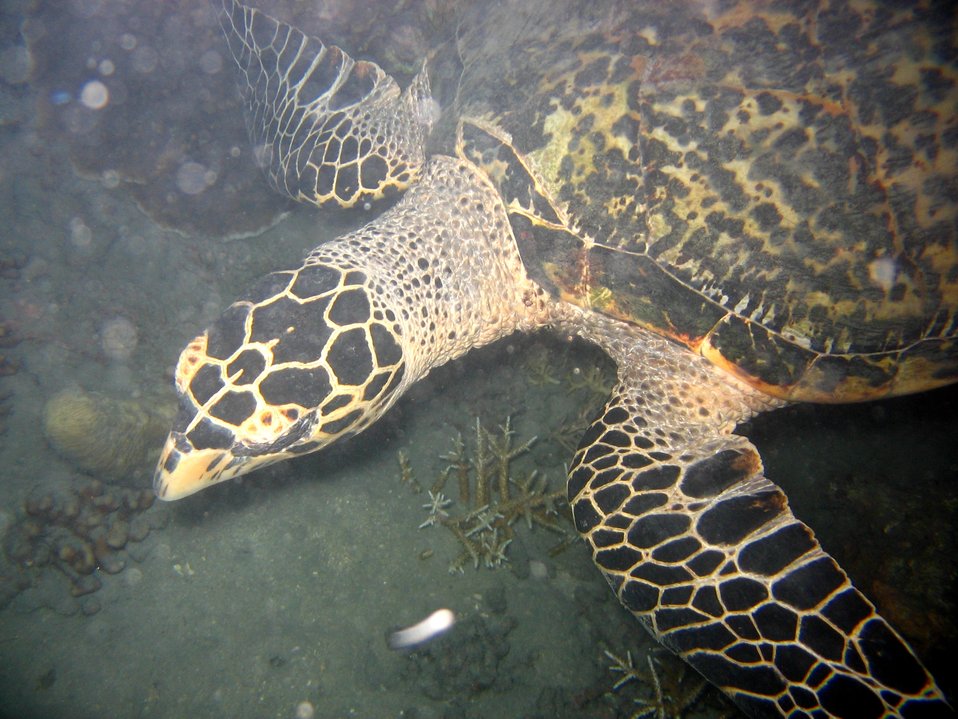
Hawksbill turtle